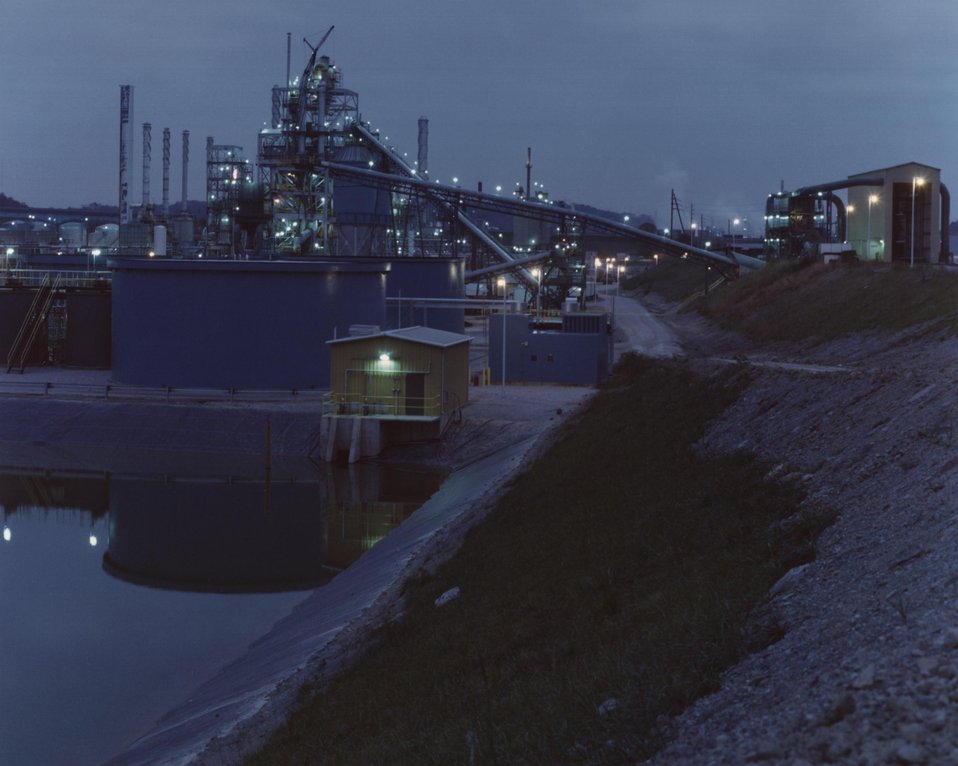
VIEW OF WASTE WATER TREATMENT AND COAL UNLOADING AND HANDLING AREAS AT THE H-COAL PILOT PLANT.